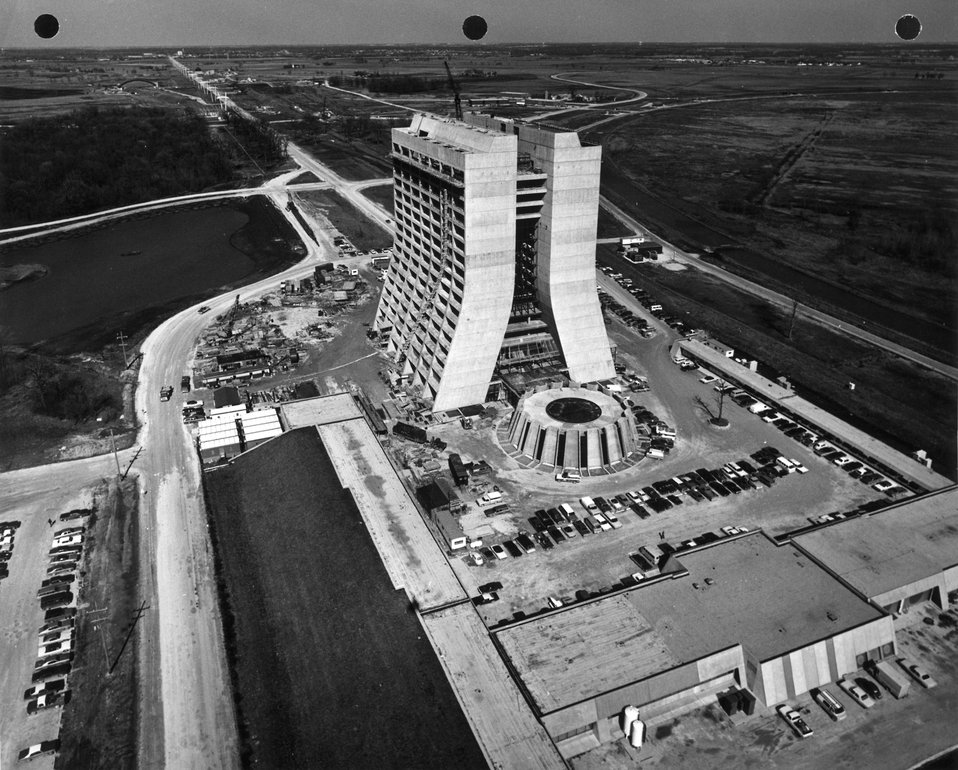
The tall Central Laboratory Building is the administrative center of the facility. Just below it is a circular auditorium. c. 1973